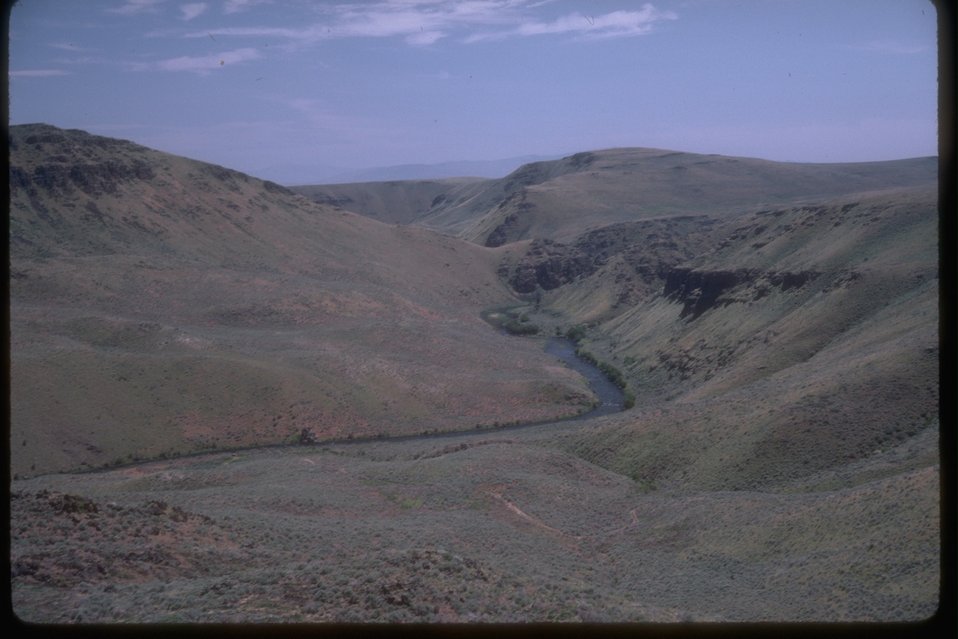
Scenic view into the Power River Canyon.